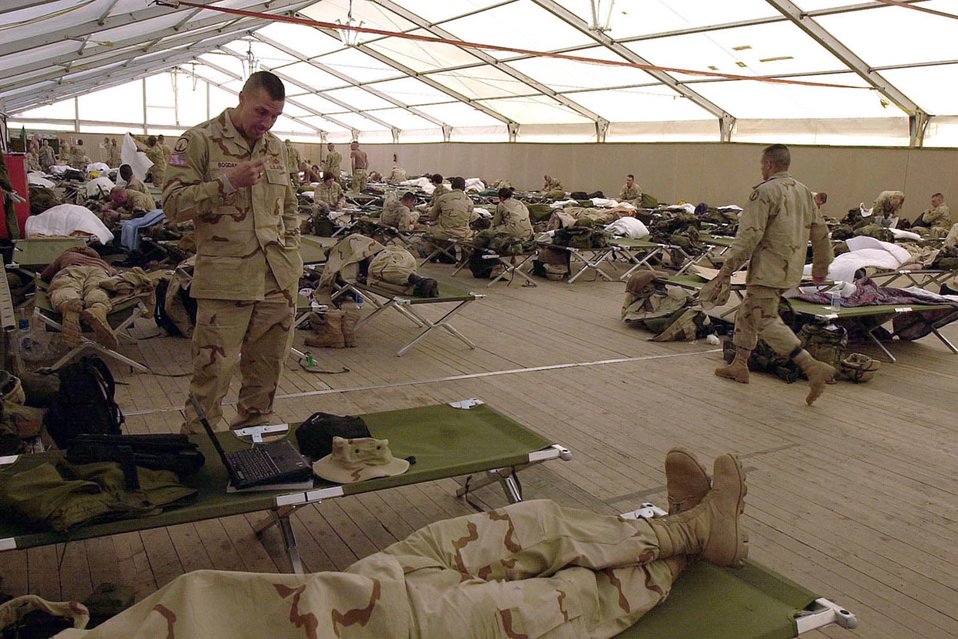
Headed downrange

RHEIN-MAIN AIR BASE, Germany -- More than 250 troops from the 720th Military Police Battalion based at Fort Hood, Texas, relax at the tent city here March 21 on their way downrange. More than 1,300 troops gathered here March 21 to 22, filling the tent city, contingency billeting and fitness center. The 726th Air Mobility Squadron here has processed more than 20,000 passengers since March 1.